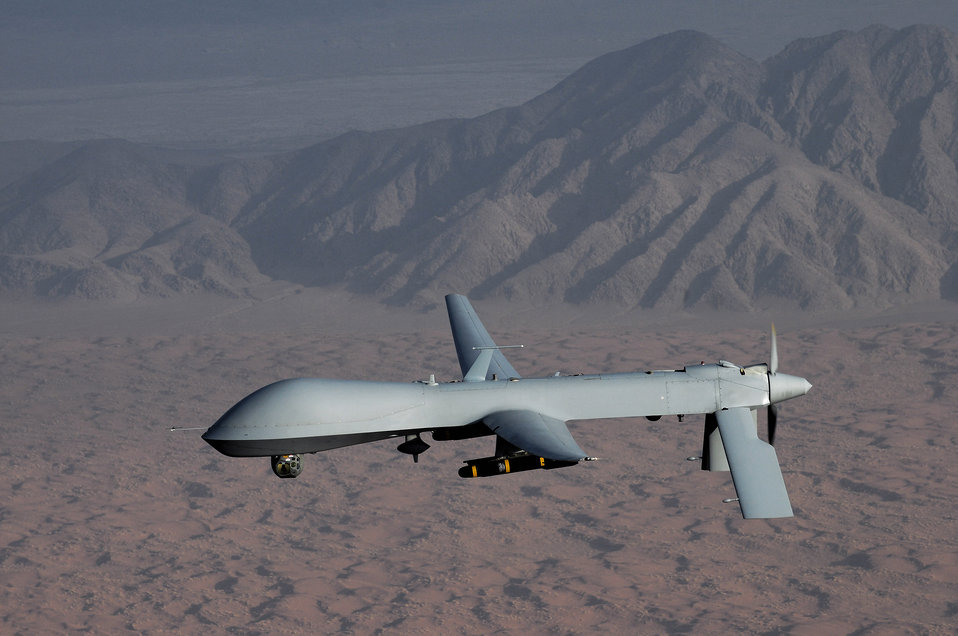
MQ-1 Predator

Air Force officials are seeking volunteers for future training classes to produce operators of the MQ-1 Predator unmanned aircraft.